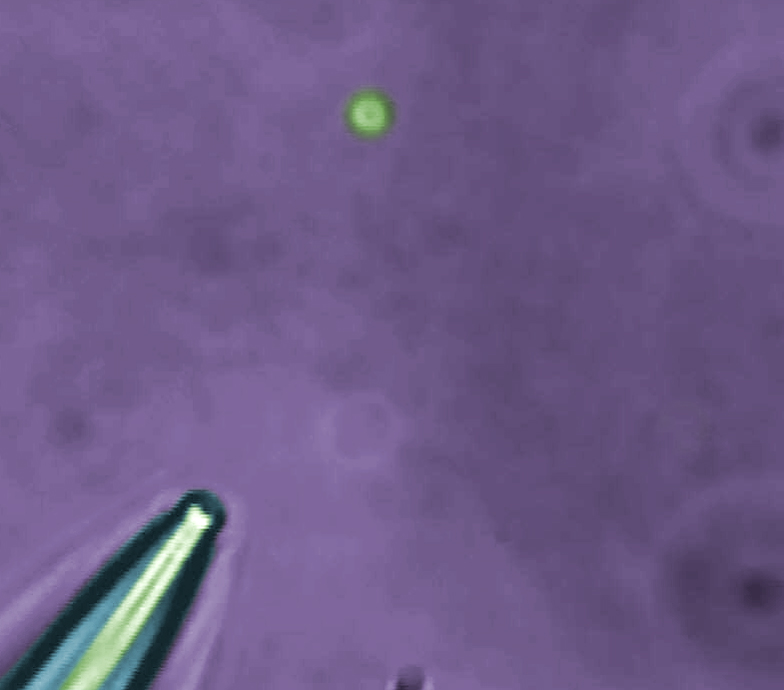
'Nanodrop' Test Tubes Created with a Flip of a Switch

With the flip of a switch: Nanodrop 'test tubes' are created by an electronic switch that causes a micropipette to jerk back and leave behind a droplet less that 1 micron in diameter for study. Video clip available at URL below.